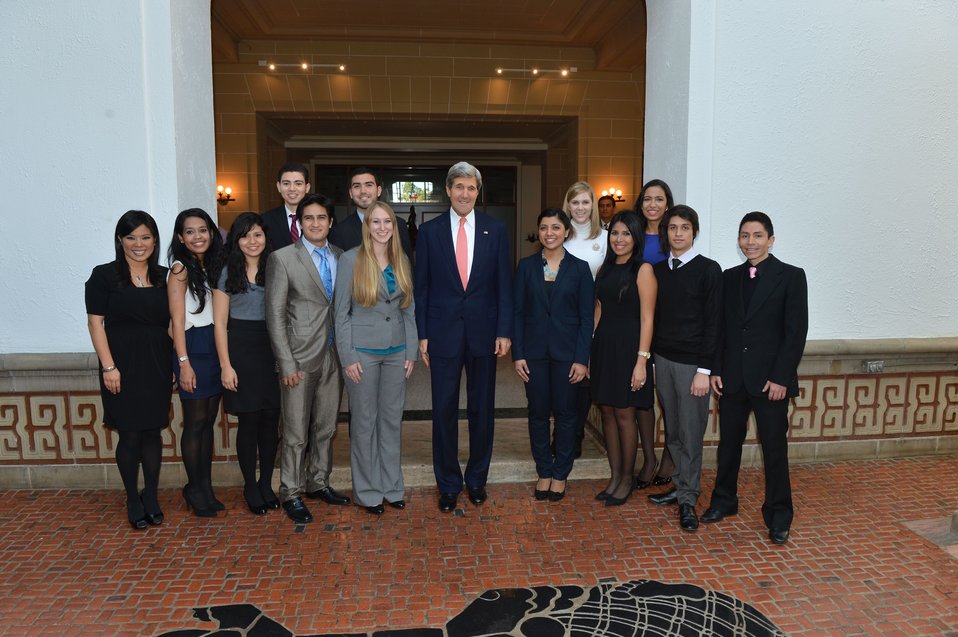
Secretary Kerry Meets With OAS and WHA Interns

U.S. Secretary of State John Kerry poses for photo with interns from the Organization of American States (OAS) and the Department of State's Bureau of Western Hemisphere Affairs before delivering remarks on U.S. Policy in the Western Hemisphere at the OAS in Washington, D.C., on November 18, 2013.